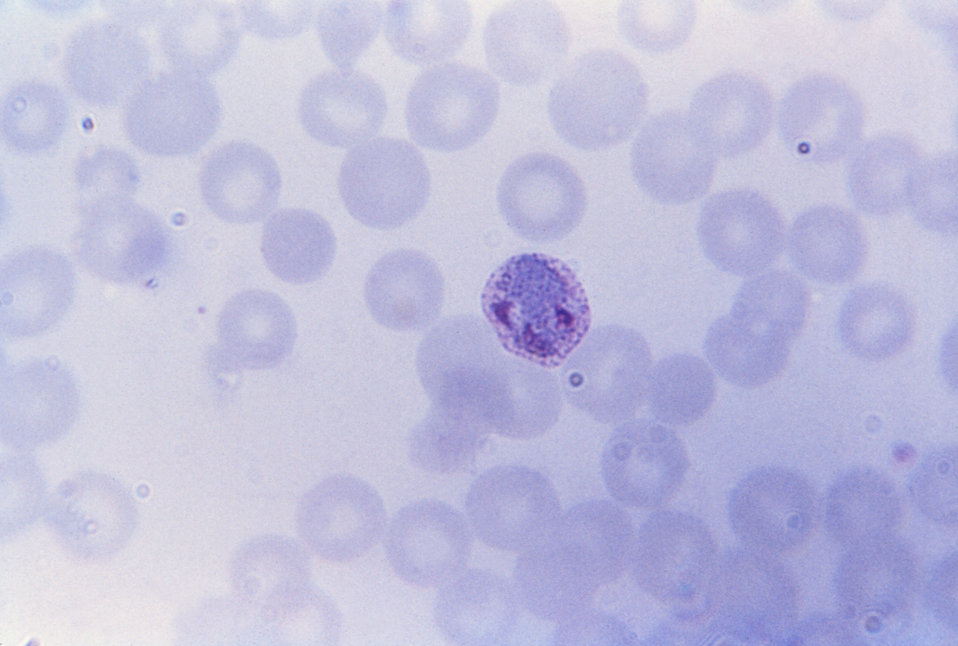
This thin film Giemsa stained micrograph depicts an immature Plasmodium vivax schizont.